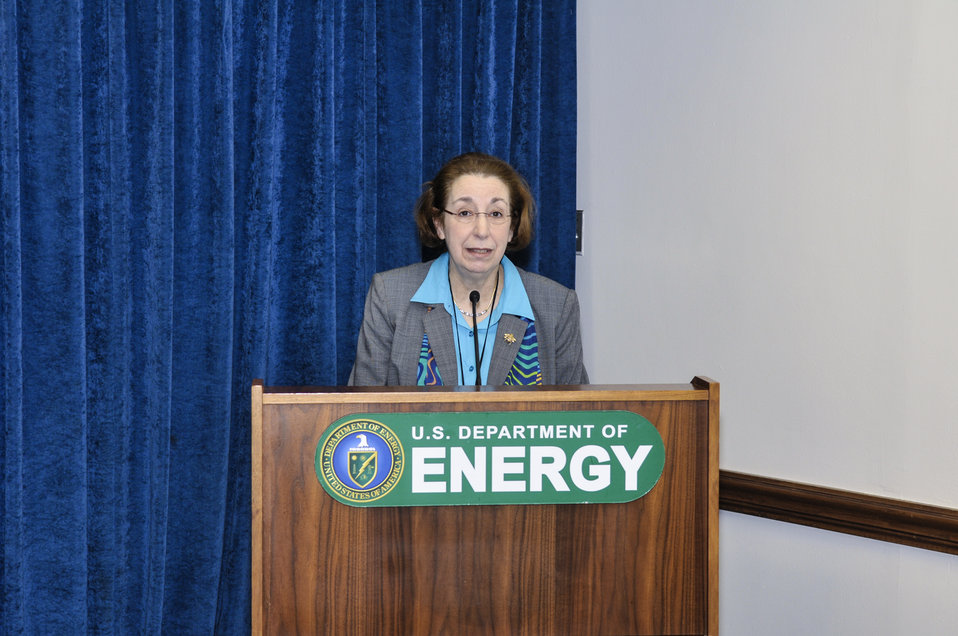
PECASE Awards: DOE Secretary E.Moniz with DOE Office of Science Acting Director Pat Dehmer on April 14, 2014.